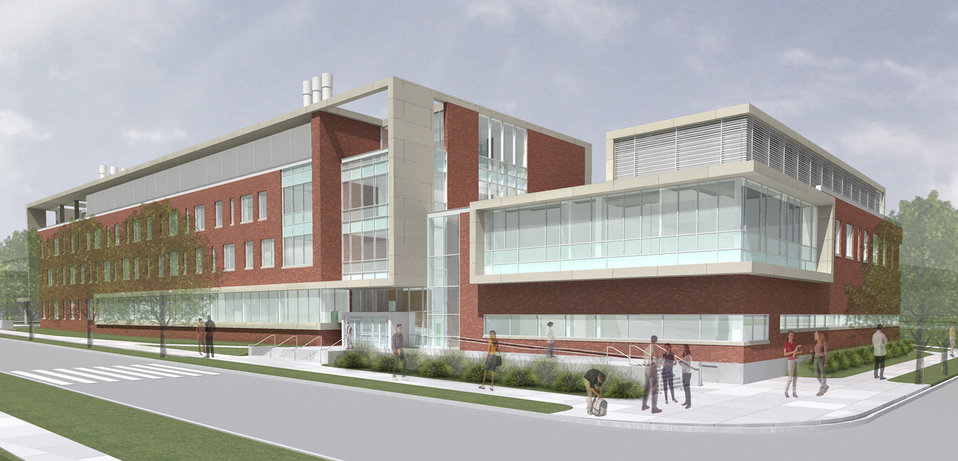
Recovery Act Grant; University of Nebraska-Lincoln

The planned Nanoscience Metrology Facility at the University of Nebraska-Lincoln. The nanoscience facility is on the right hand side of the picture, and is an addition to the existing building on the left hand side.